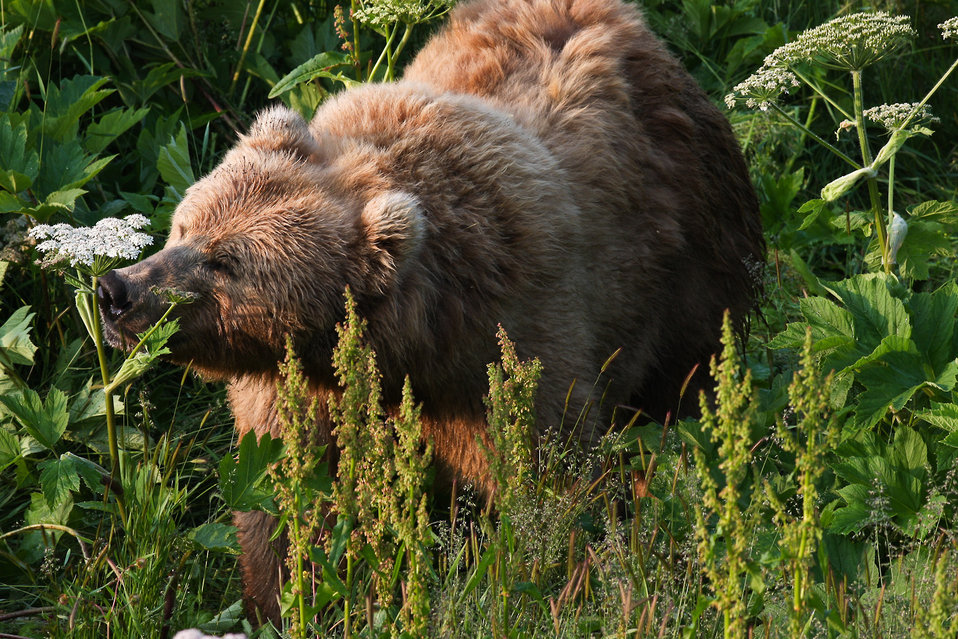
Sow eating wild celery

Kodiak brown bear.
Lisa Hupp/USFWS